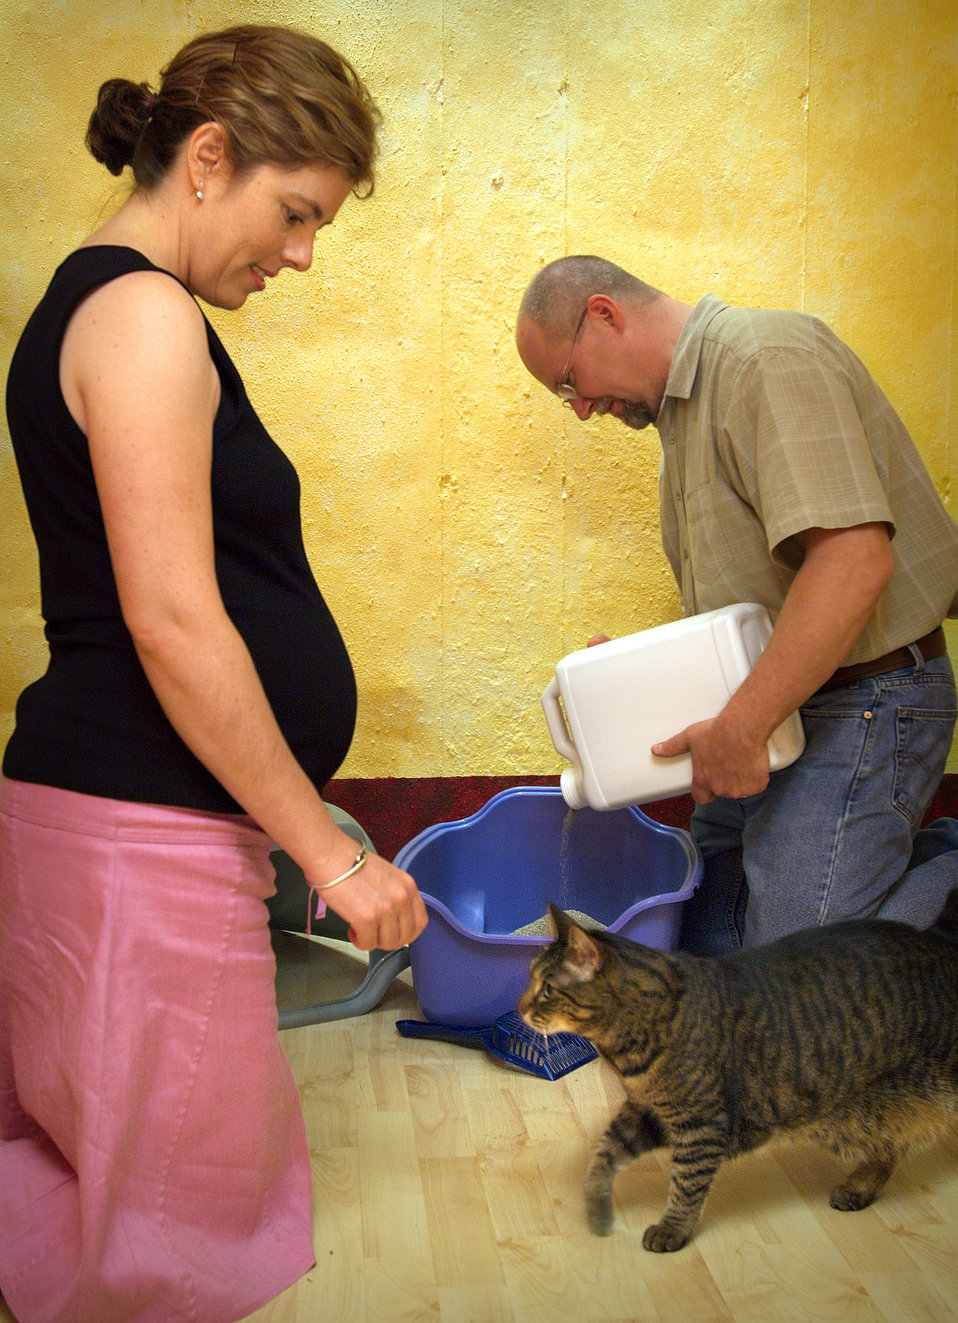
The pregnant woman depicted in this 2005 image, was about to pet her cat while her husband was in the process of changing the cat's litter, in order for the woman to avoid contact with possible pathogens such as Toxoplasma gondii, the etiologic agent responsible for the disease, 'Toxoplasmosis'. This parasite is found throughout the world, infecting more than 60 million people in the United States. Of those who are infected, very few have symptoms because a healthy person's immune system usually keeps the parasite from causing illness. However, pregnant women and individuals who have compromised immune systems should be cautious; for them, a Toxoplasma infection could cause serious health problems.